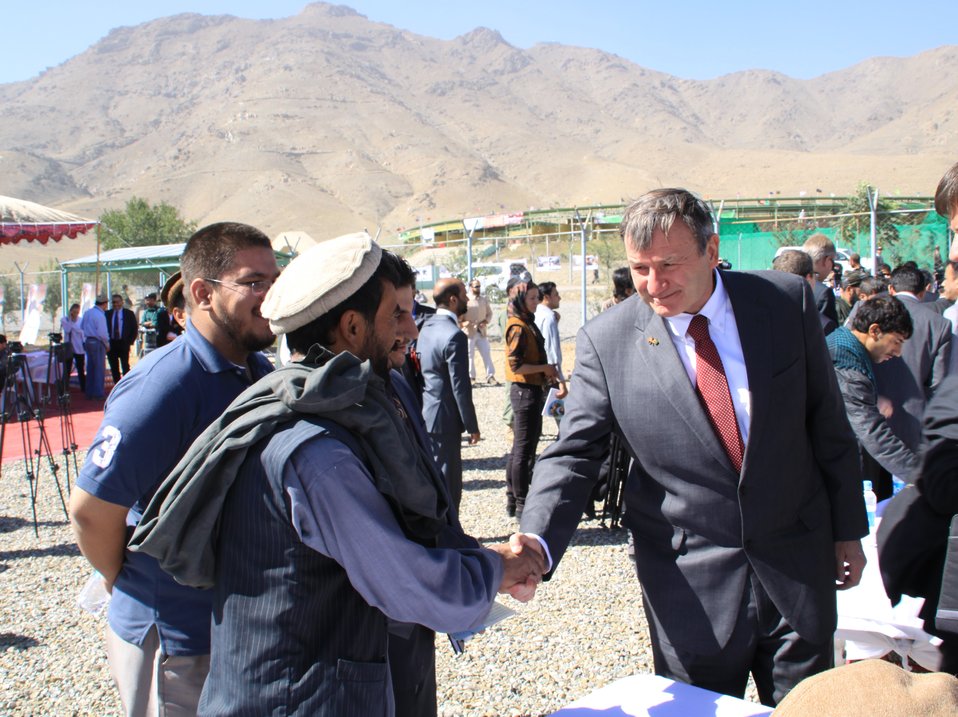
Afghan Farmers Break Ground, Sow Seeds in AVIPA's 2010 Wheat Seed Distribution Launch